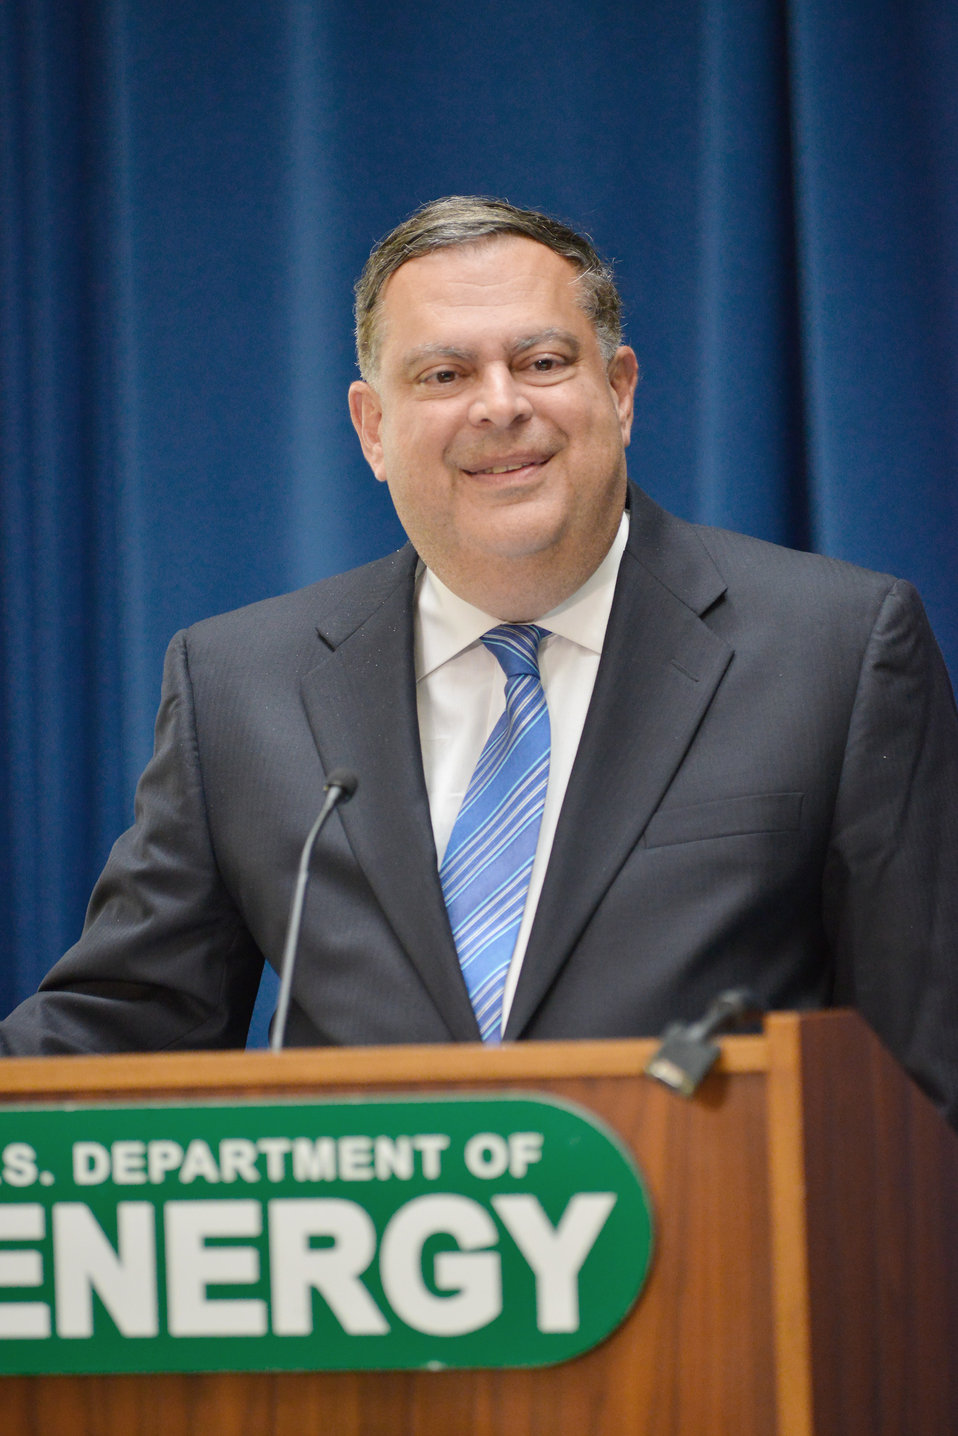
Secretary Abraham

Secretary Spencer Abraham, the tenth Secretary of Energy, gave closing remarks at the 35th Anniversary and Honors Awards ceremony on October 4, 2012.